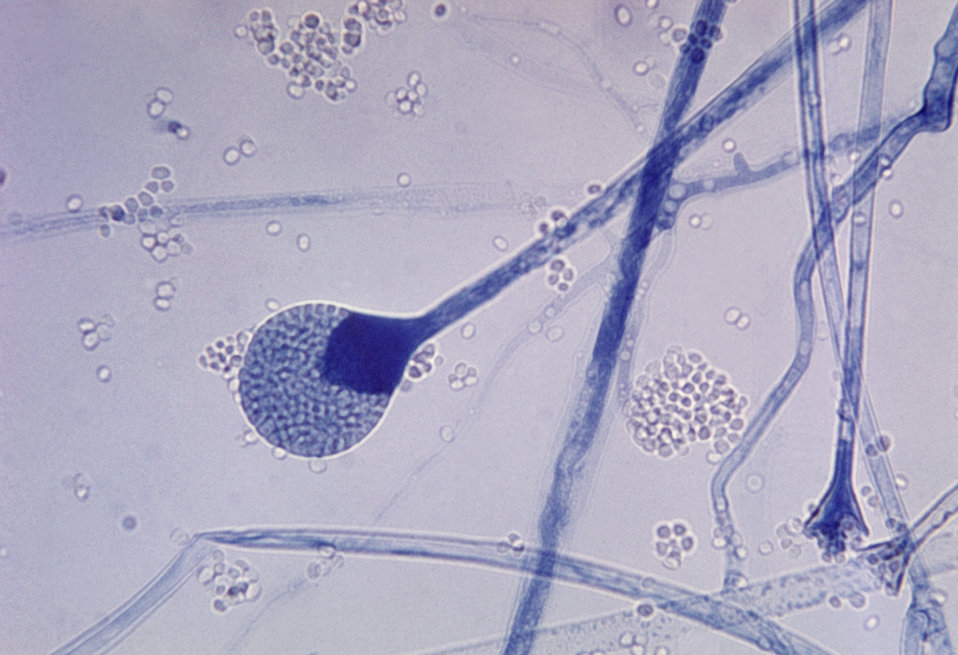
This photomicrograph reveals a mature sporangium of a Mucor sp. fungus.